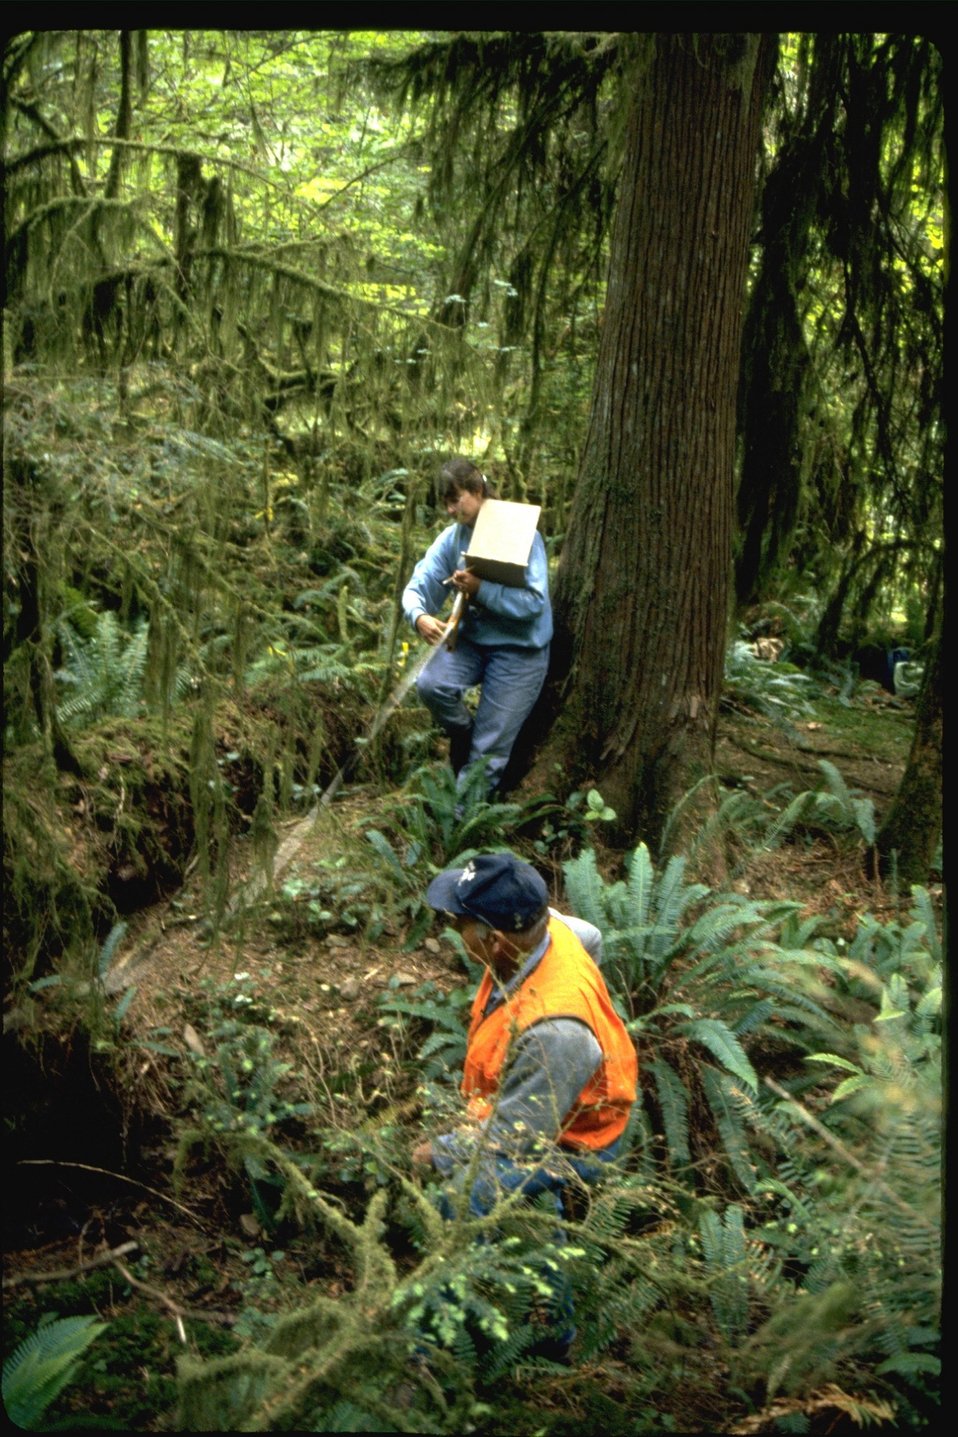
Wendy and Ted conducting timber volume measurements.